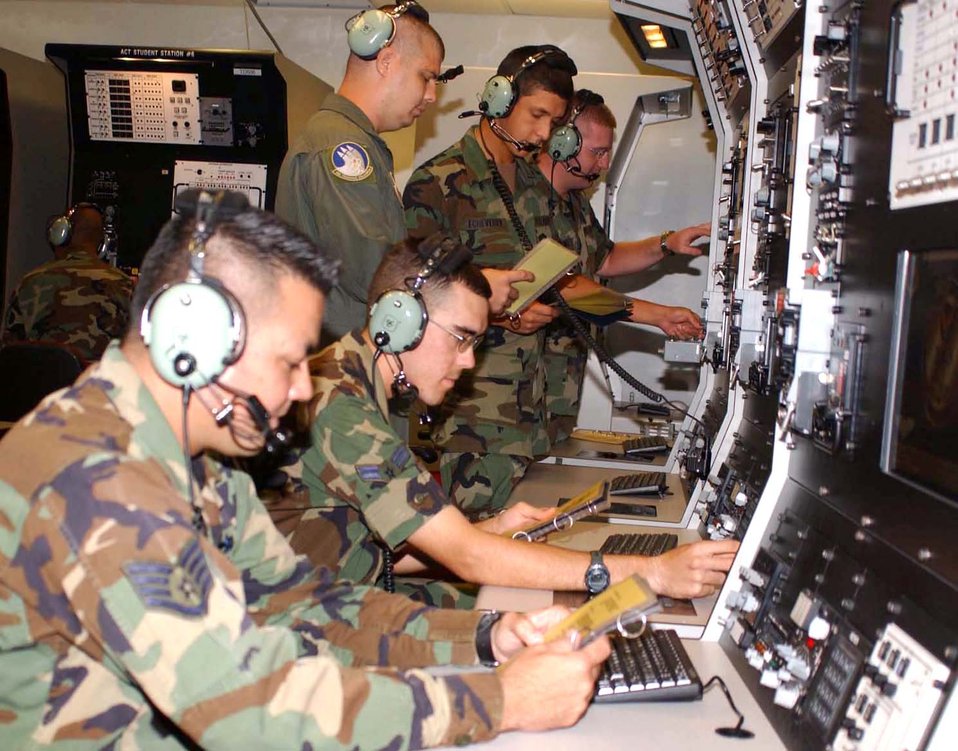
Tenacious trainers triumph in Katrina's wake

(From front) Staff Sgt. Terry Roundtree, Airman 1st Class Sean Nesburg, Tech. Sgt. Taite Randolph, Airman Basic Jeffrey Echeverry and Airman 1st Class Theodore Persing use aircrew maintenance trainer equipment recently at the 332nd Training Squadron at Keesler Air Force Base, Miss.